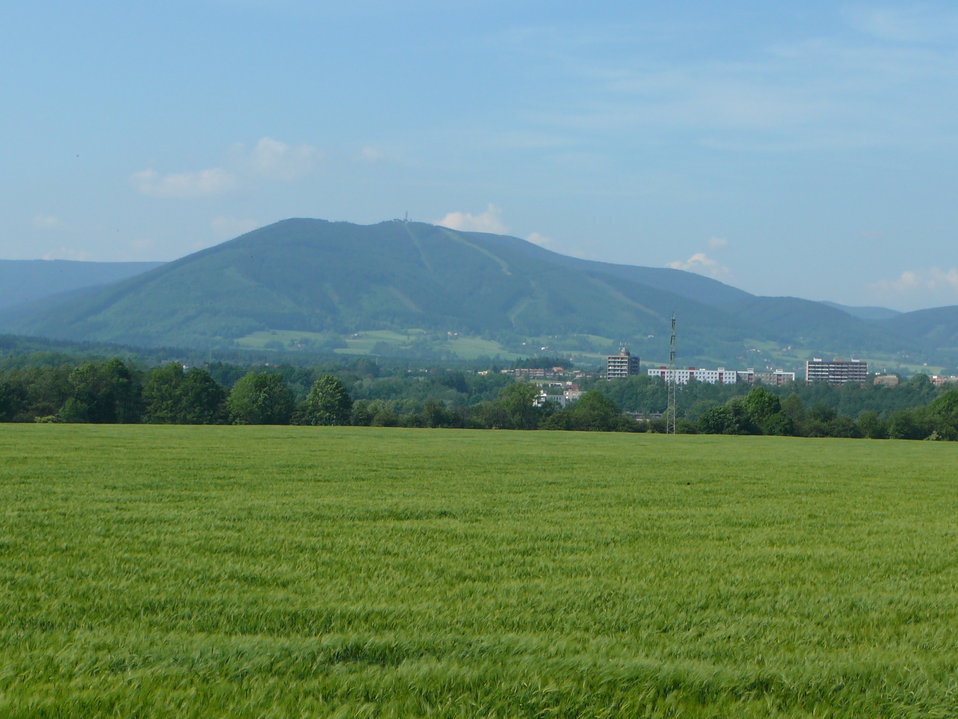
Čeština: Javorový vrch s vysílačem